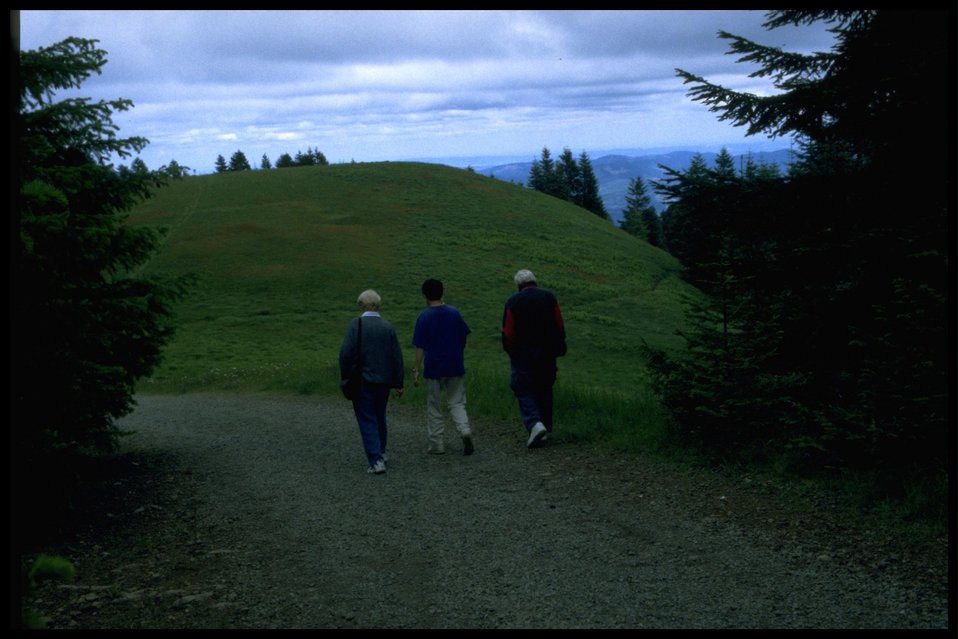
Scenic view from Mary's Peak.